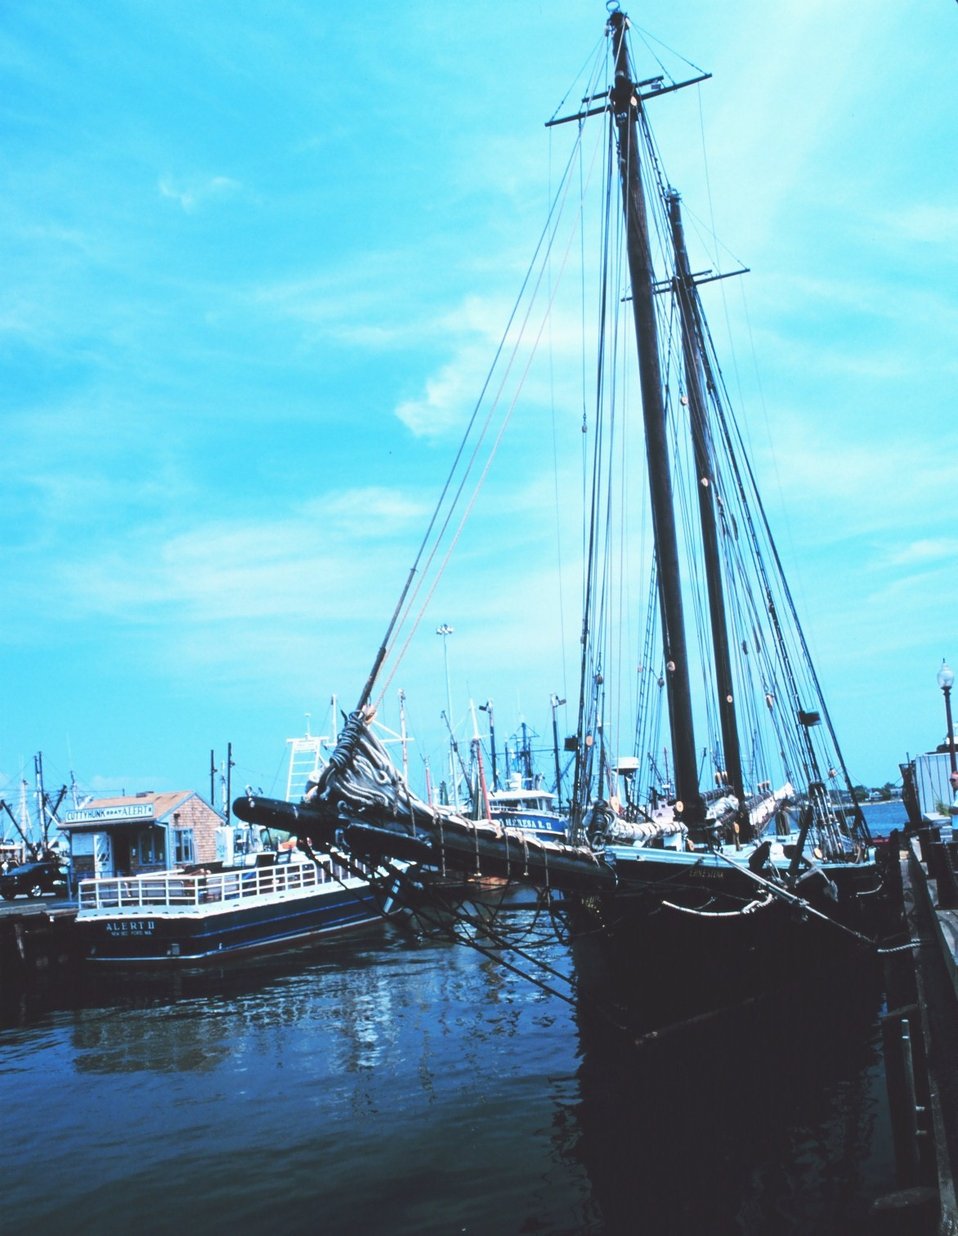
The old fishing schooner ERNESTINA at New Bedford Harbor.